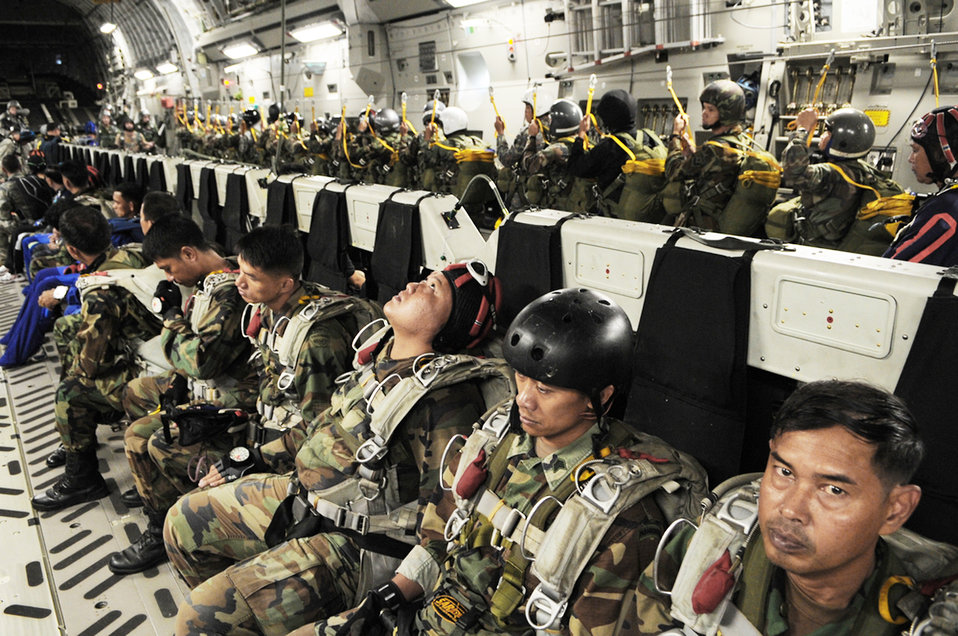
COPE TIGER 2010

Members of the Royal Thai Air Force parachute team standby for a 10,000-foot static-line jump from a C-17 Globemaster III during Cope Tiger 2010 March 3, 2010 at Dom Muang Royal Thai Air Force Base, Thailand.